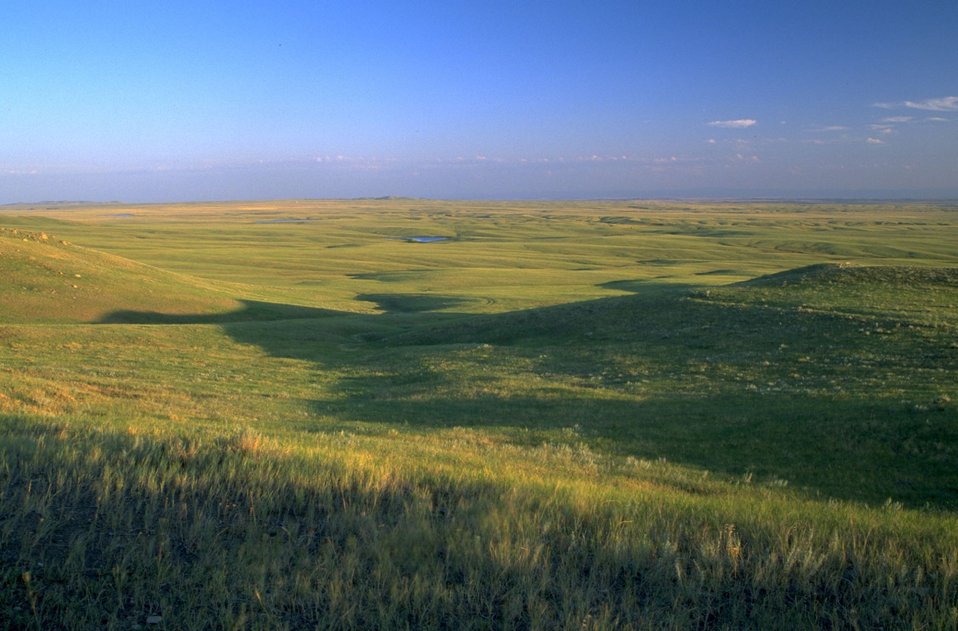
Grassland Vista 30 miles north of Belle Fourche